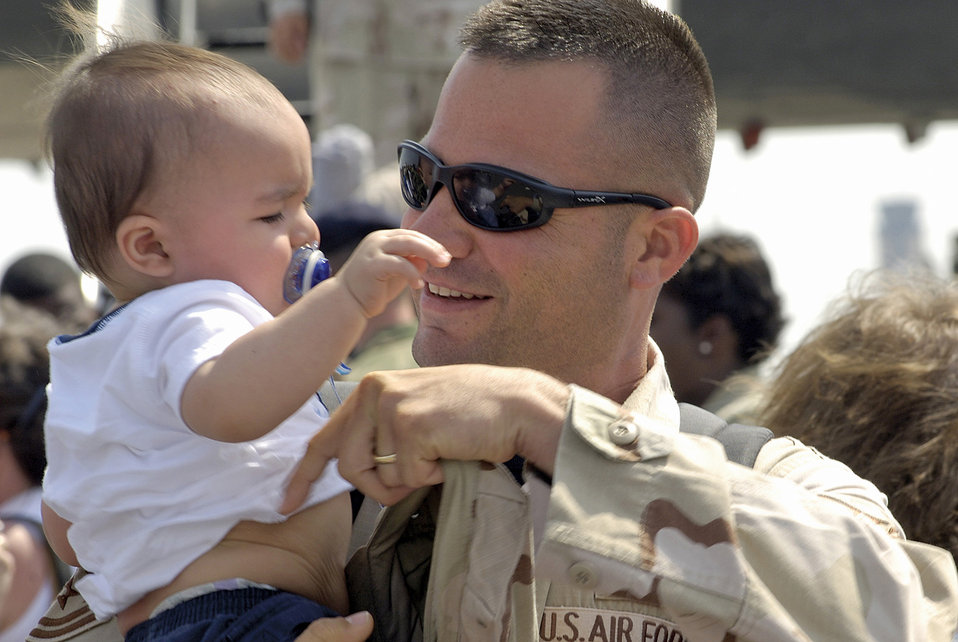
In Dad's arms

Tech. Sgt. Chad Hashley holds his son, James, on Monday, April 3, 2006, after returning to Charleston Air Force Base, S.C., from a six-month deployment to Camp Bucca, Iraq. Sergeant Hashley is with the 437th Security Forces Squadron.